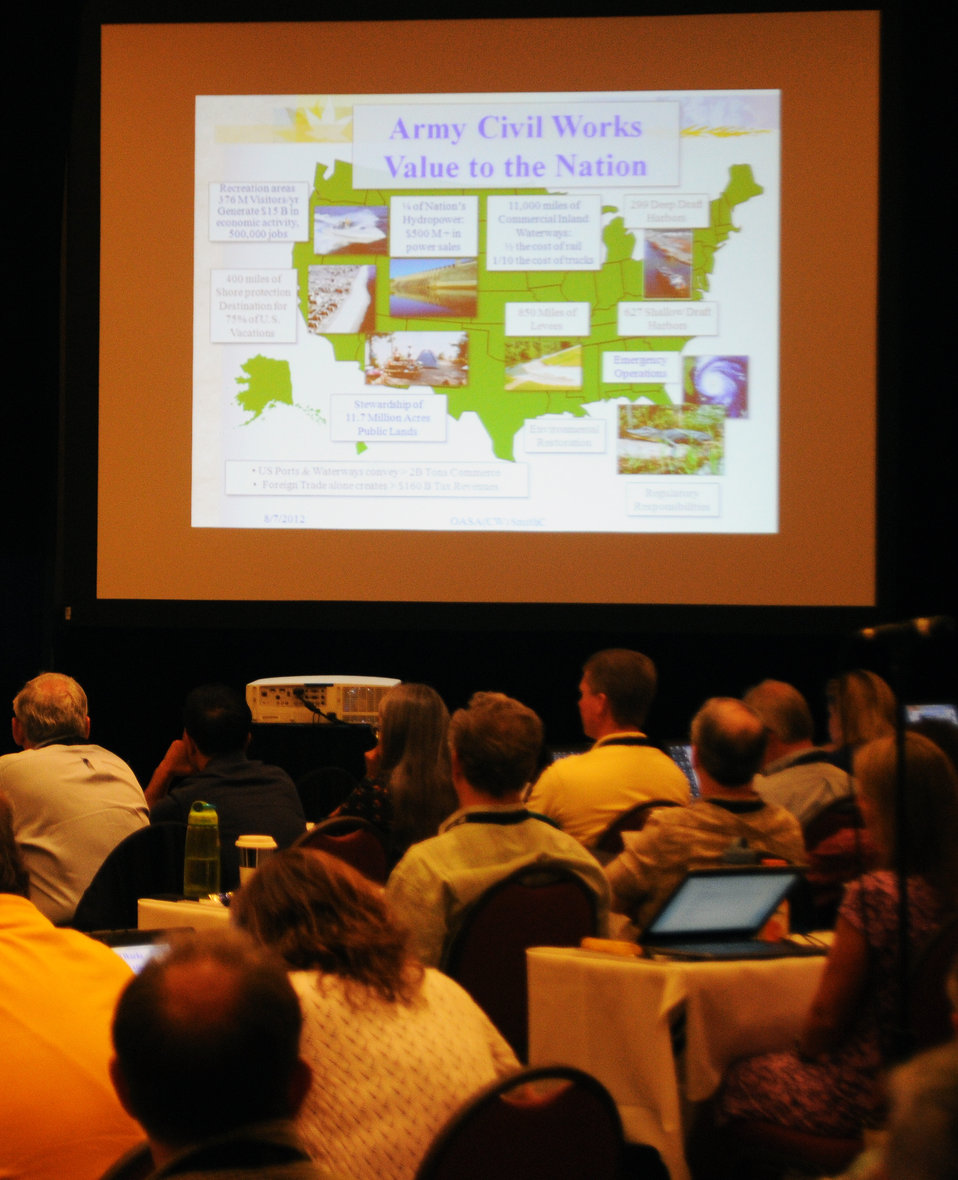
National Regulatory Conference 2012

More than 170 regulators receive a briefing on Corps’ operations during this year’s National Regulatory Conference in Sacramento, Calif., Aug. 7, 2012. The national conference, which ran from Aug. 6-9, provided regulators the opportunity to share ideas and discuss ways to improve the permit program for the public.

The Department of the Army's regulatory program is one of the oldest in the federal government and currently authorizes over $220 billion in economic development projects including transportation, energy, residential and commercial development while working to minimize impacts to U.S. waterways and wetlands.